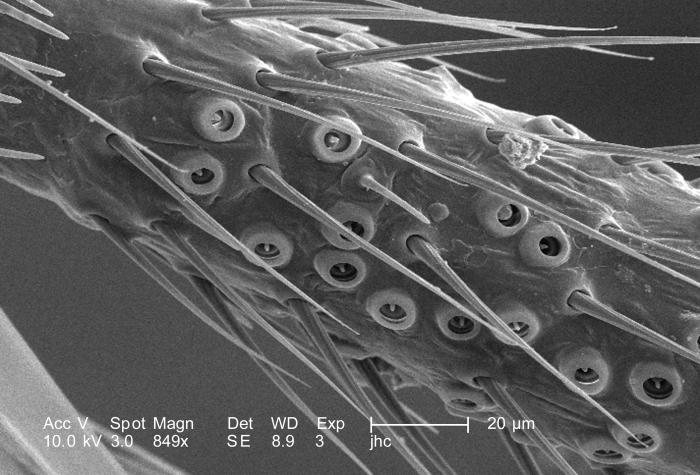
Under a moderately high magnification of 849X, approximately 1/4th the magnification of PHIL 9991, this scanning electron micrograph (SEM) revealed some of the exoskeletal ultrastructural morphology of an unidentified debris-laden insect, which had been discovered deceased in the suburbs of Decatur, Georgia. Depicted in this particular image was a section of one of the insect's six legs, which emanated from its thoracic region, located between its head and abdominal regions. The fact that this organism maneuvered about on jointed legs, placed it into the Phylum Arthropoda, i.e., Arthro